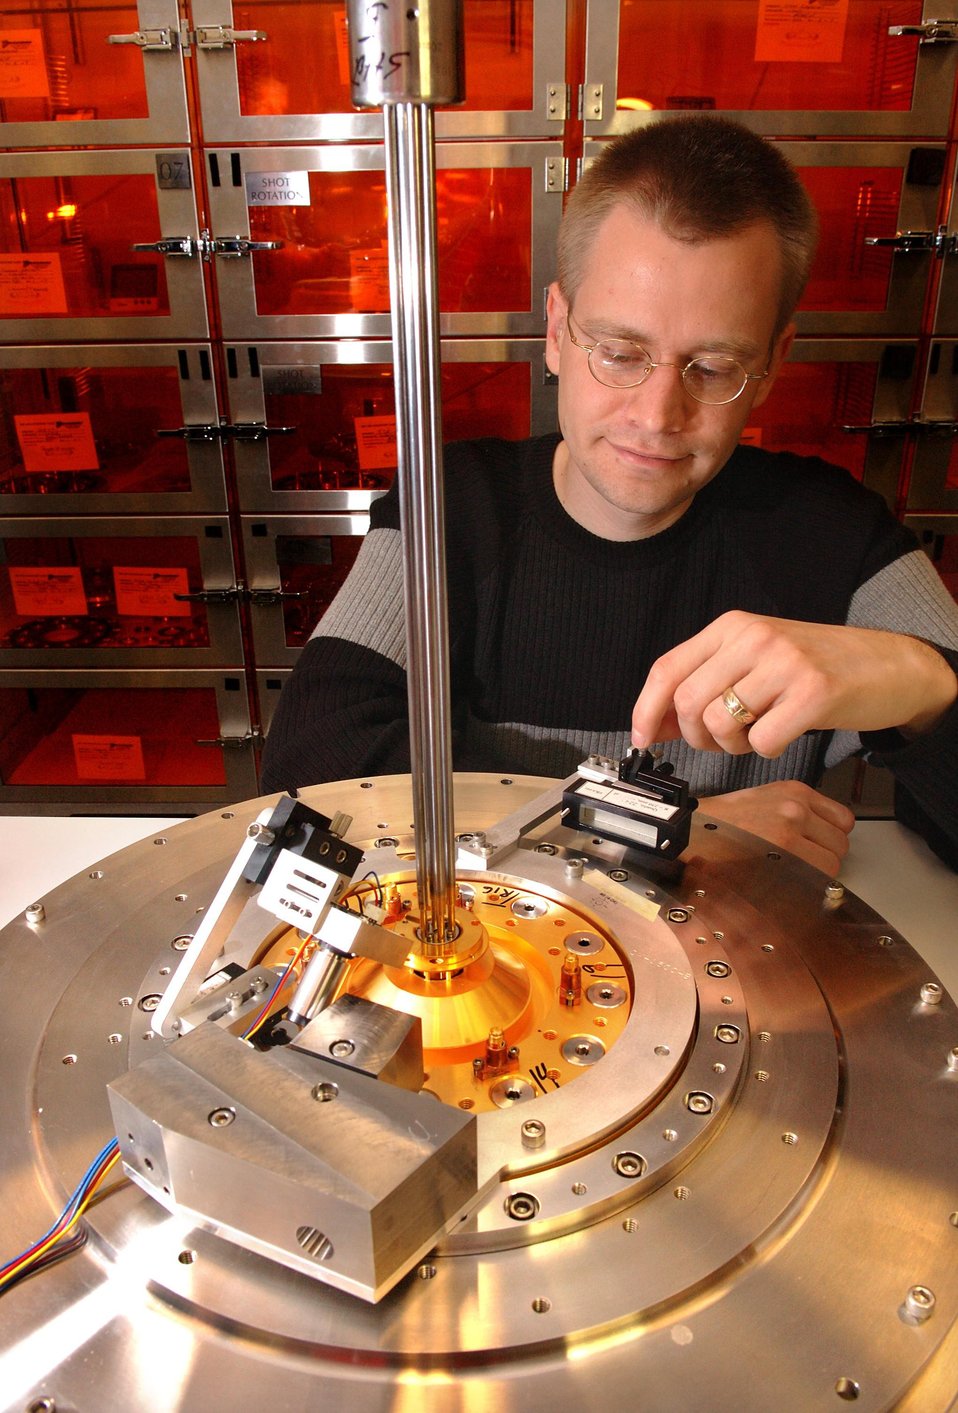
SNL LABORATORY RESEARCHER DEMONSTRATING APPARATUS USED TO PEER INTO THE CENTER OF SANDIA'S Z MACHINE.

THIS SETUP, CREATED AT SANDIA CAN ENABLES SCIENTISTS TO VIEW THE CENTER OF SANDIA'S Z MACHINE AT THE MOMENT OF FIRING. THE CRYSTAL UNDER SCIENTIST DANIEL SINARS' FINGER IS ATTACHED TO PORTIONS OF A Z TARGET CONFIGURATION. OTHER THAN A NUCLEAR BOMB, Z IS THE MOST POWERFUL GENERATOR OF X-RAYS ON THE PLANET.